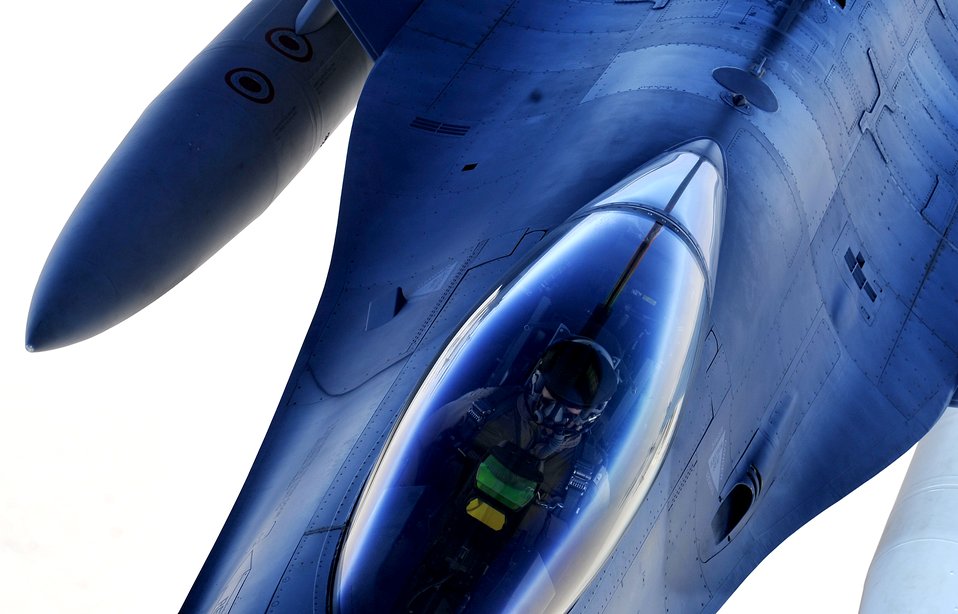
Into the blue

An F-16 Fighting Falcon is refueled by a KC-135 Stratotanker Nov. 9, 2011, over Iraq. KC-135 Stratotankers from the 340th Expeditionary Air Refueling Squadron provide approximately 200,000 pounds of fuel each day to aerial assets in Iraq.